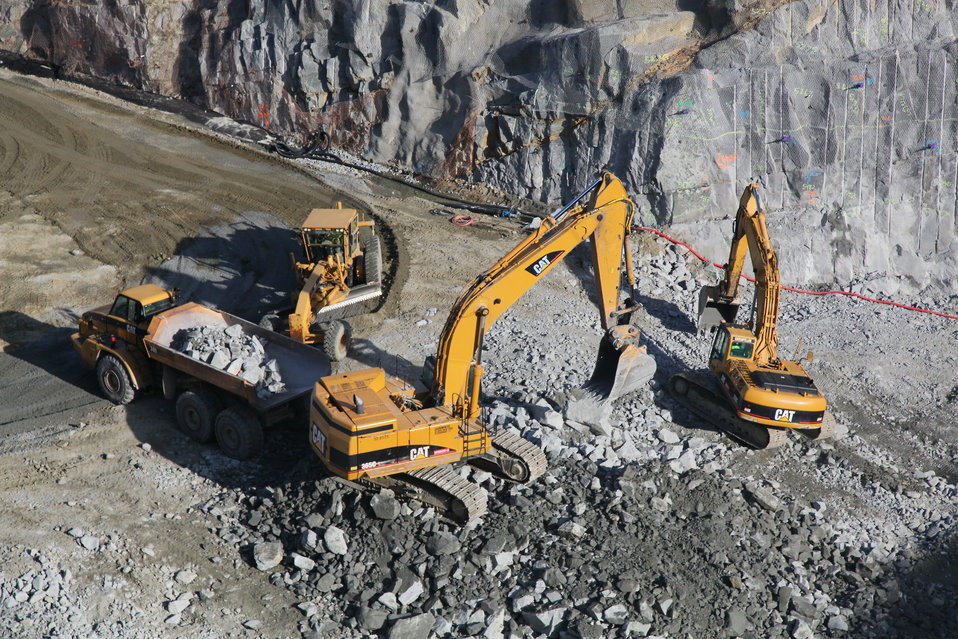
Excavation in the shear zone of the Folsom Dam auxiliary spillway

Contractors for the U.S. Army Corps of Engineers Sacramento District excavate rock at the site for the Folsom Dam auxiliary spillway in Folsom, Calif., March 15, 2012. The rock is blasted and removed from the shear zone, the spillway’s foundation. The spillway, scheduled to be ready for use in 2017, will allow Folsom Dam to release water sooner and more safely. The project is part of the Folsom Dam Joint Federal Project, a joint effort of the U.S. Army Corps of Engineers Sacramento District, the U.S. Bureau of Reclamation, the Central Valley Flood Protection Board and the Sacramento Area Flood Control Agency to improve the safety of the dam and reduce flood risk for the greater Sacramento area.